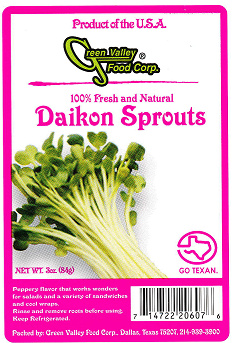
RECALLED - Sprouts

December 31, 2011 - RECALL Green Valley Food Corp. is Expanding Its Recall to Include Additional Products Because of a Possible Health Risk.